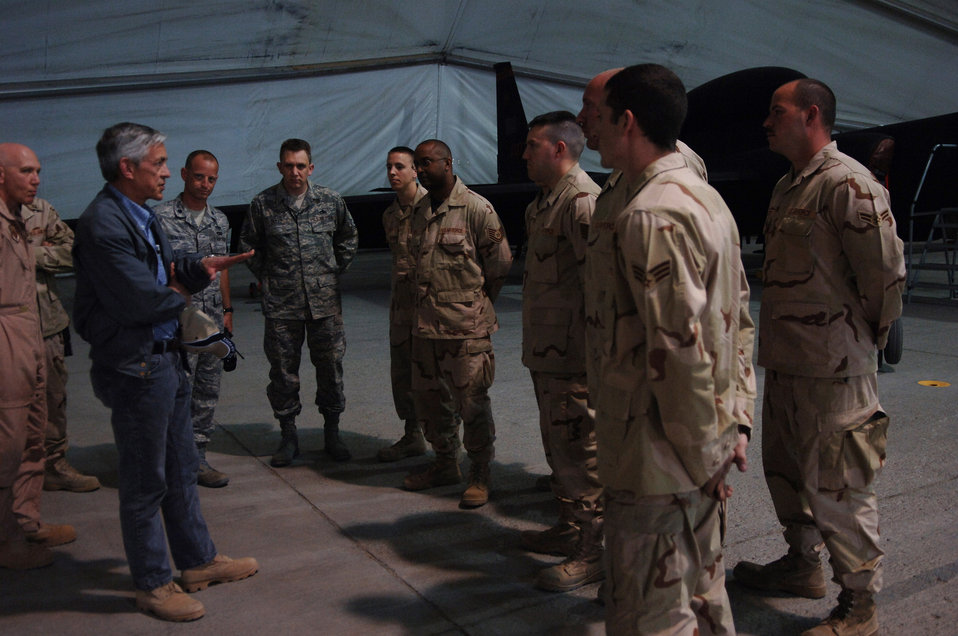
Air Force official calls for input from deployed Airmen

Assistant Secretary of the Air Force for Manpower and Reserve Affairs Craig Duehring talks to a group of Airmen during an April 9 visit to the 380th Air Expeditionary Wing at a base in Southwest Asia.